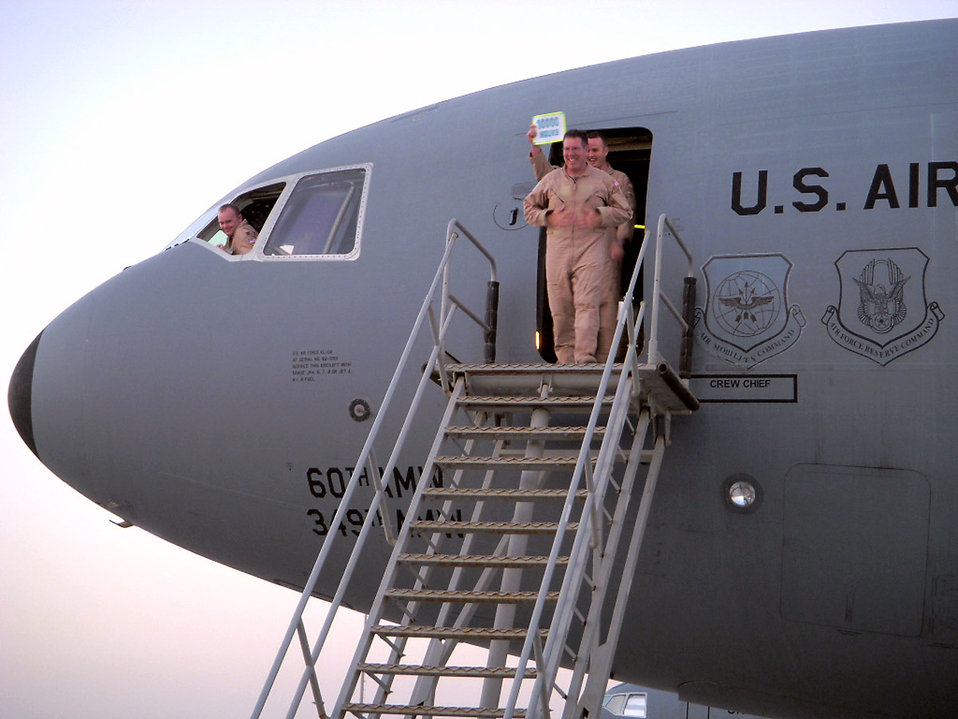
Flight engineer reaches 10,000 flight hours

Senior Master Sgt. Robert Fisher, a flight engineer in the 908th Expeditionary Air Refueling Squadron at an air base in Southwest Asia, steps off a KC-10 Extender March 29 after his landmark flight where he surpassed 10,000 flight hours.